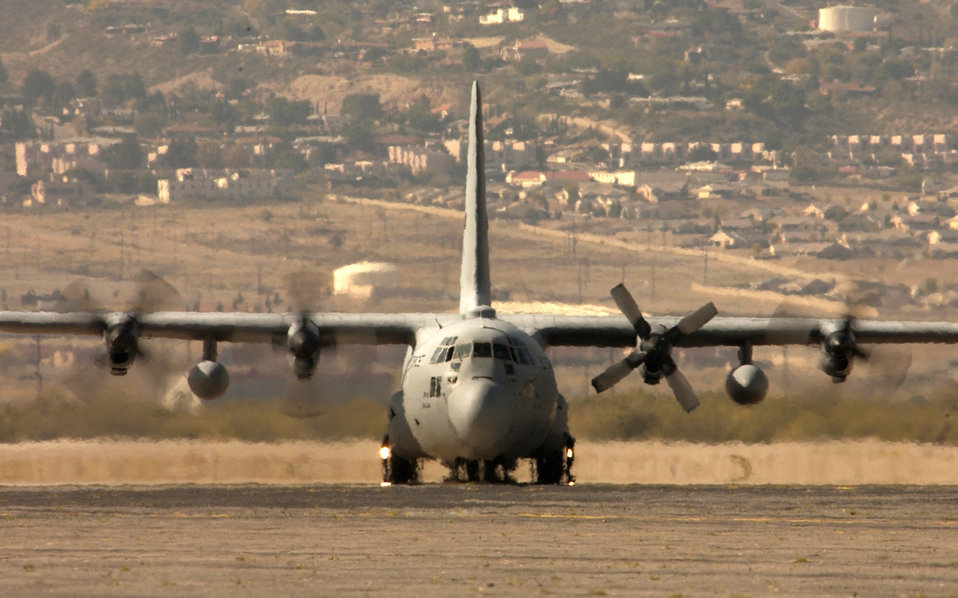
On the prowl

BIGGS ARMY AIR FIELD, Texas - A C-130 Hercules taxis to the runway during a Composite Force Operations exercise here Nov. 18. The exercise uses a realistic scenario requiring students from the USAF Mobility Weapons School at Fort Dix, N.J., to plan and execute airdrop, air land and air refueling operations.